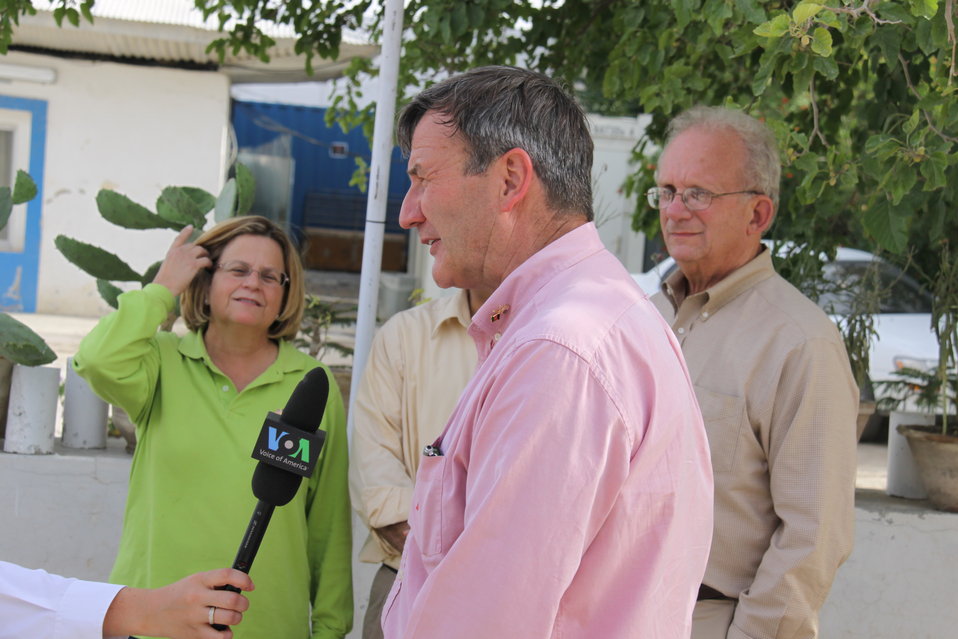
Meeting with Local Leaders in Kandahar